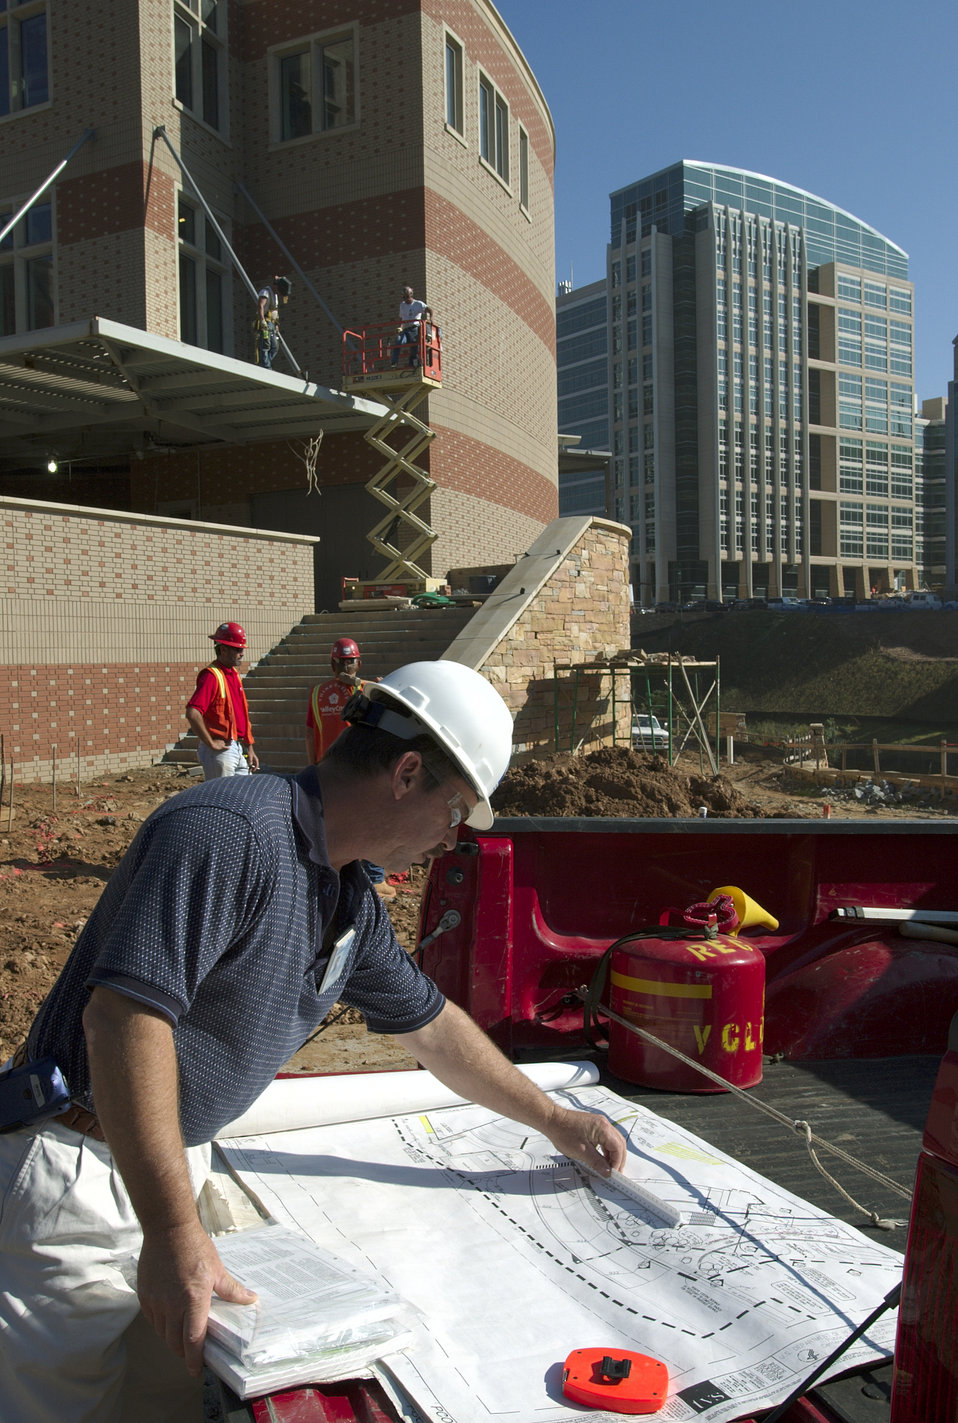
This 2005 photograph showed CDC audio visual production specialist, Russell Chamblee, as he reviews engineering diagrams during the construction of the Building 19, Scientific Communications Center located on the organization's Atlanta, Georgia Roybal Campus.